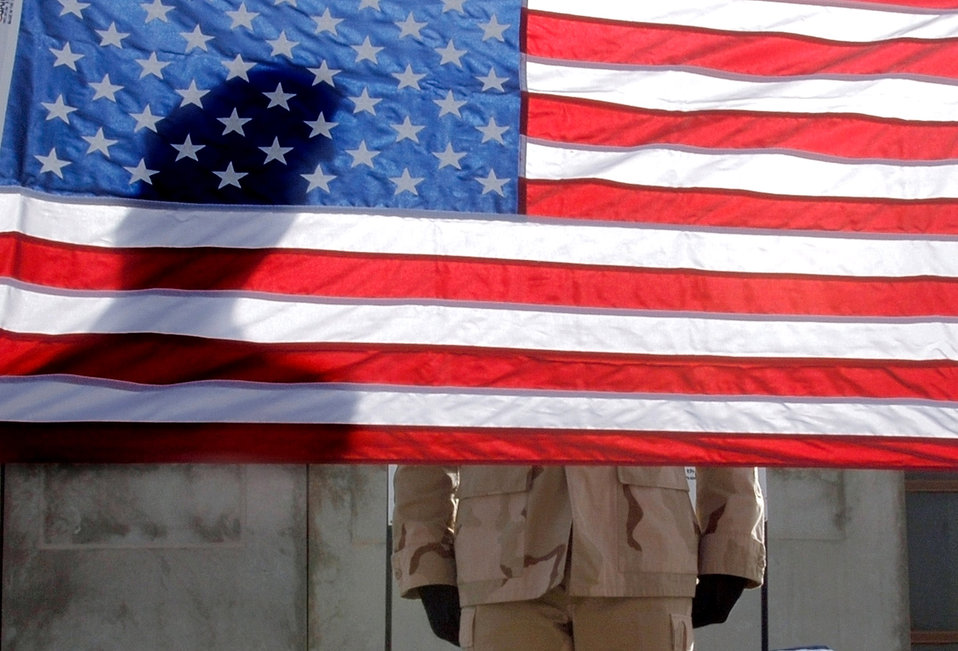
Honoring the flag

The sun cast a diagonal shadow of Staff Sgt. Jody Nitz on the U.S. flag while he and fellow Airmen conducted an official flag raising and folding ceremony April 21 in Baghdad, Iraq. The Sather Air Base Honor Guard raised and folded 23 U. S. flags. Sergeant Nitz is assigned to the 447th Expeditionary Medical Squadron.